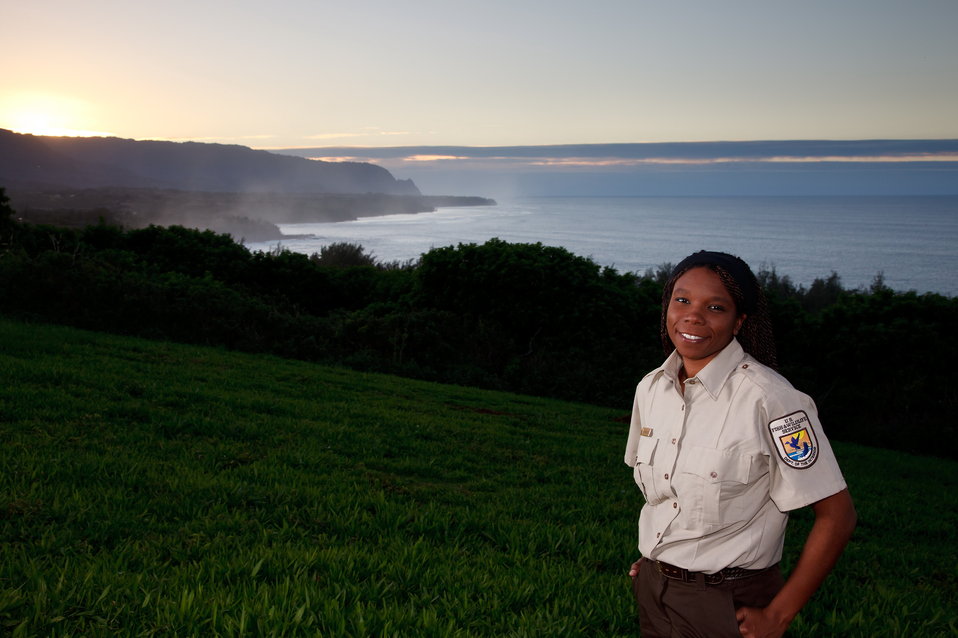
Shannon Smith, refuge manager at Kaua'i National Wildlife Refuge Complex in Hawaii.